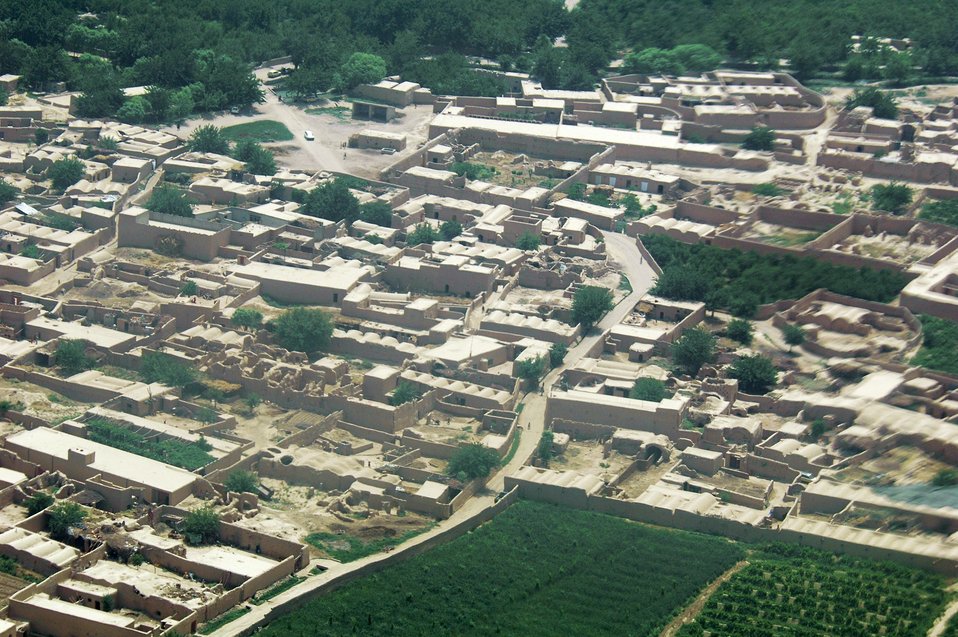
CODEL Berman